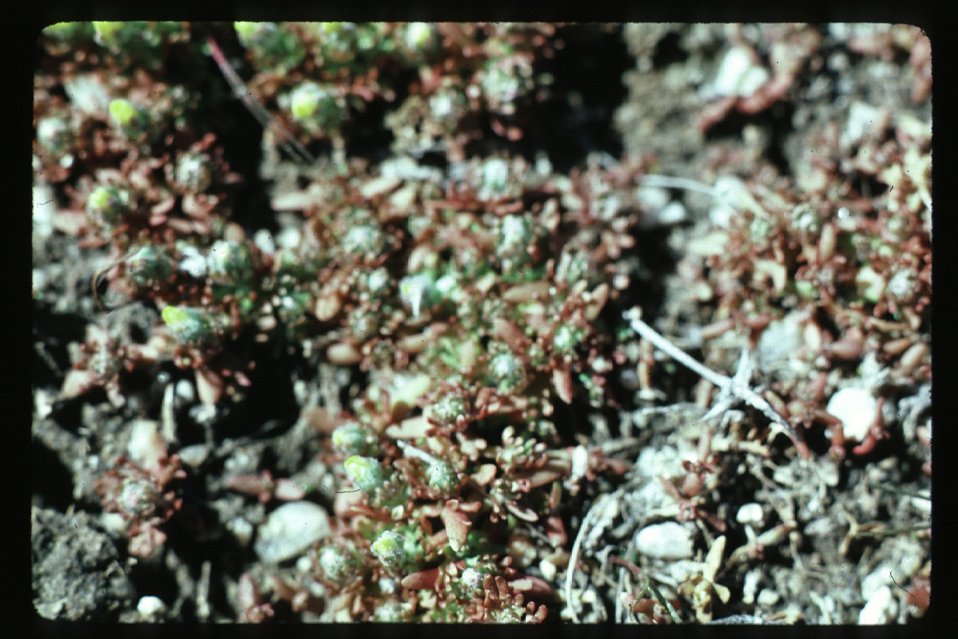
Ranunculus testiculus bur buttercup Wildflower, exotic annual weed